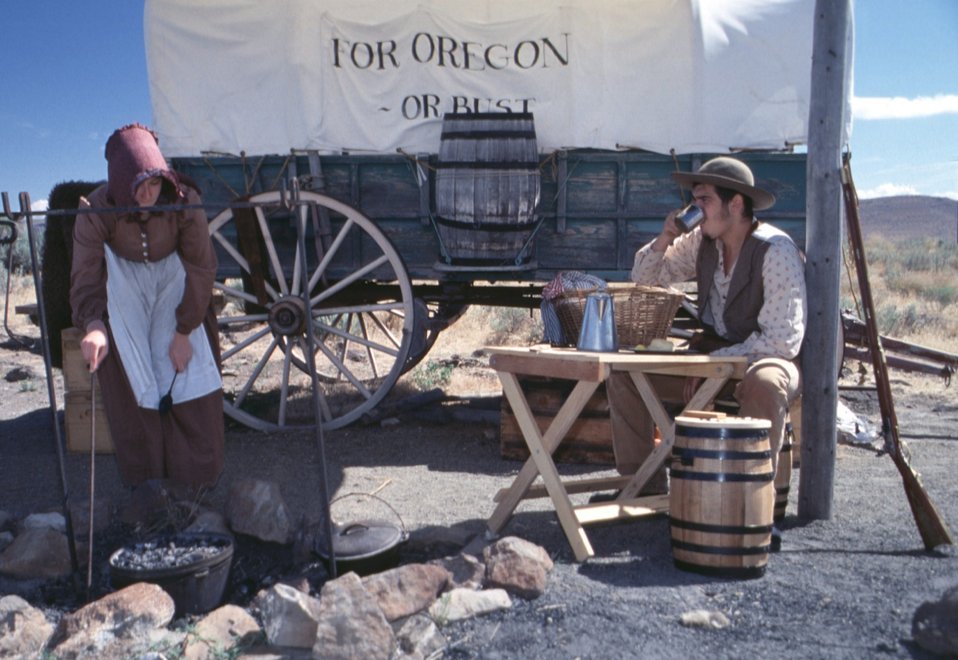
Rebecca Crow and Brandon Kames portray Oregon Trail pioneers at a wagon encampment.